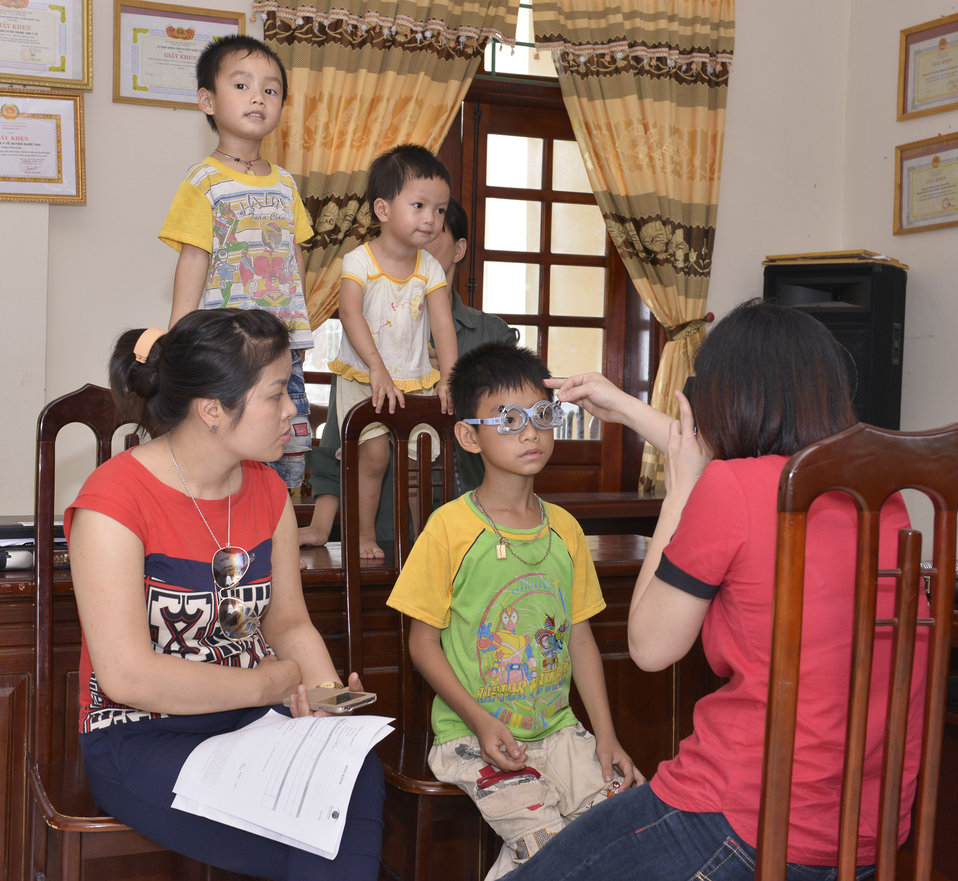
Eye screening for kindergarten children in Quoc Oai district of Hanoi

Quoc Oai, Hanoi. May 31, 2014.